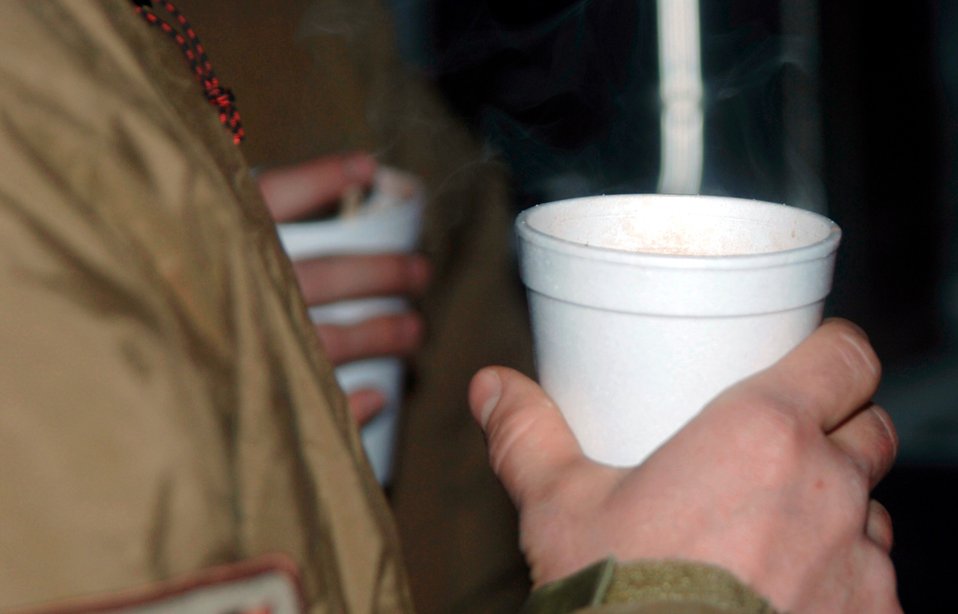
Bagram Airmen launch 'care strikes' to spread cheer

Aircraft maintenance servicemembers here drink hot chocolate during a frigid night shift, Nov. 26. The drinks were courtesy of a group, led by Capt. Ken Valardi, 455th Air Expeditionary Wing Command chaplain, that regularly brings beverages and fellowship to wing Airmen on the night shift.